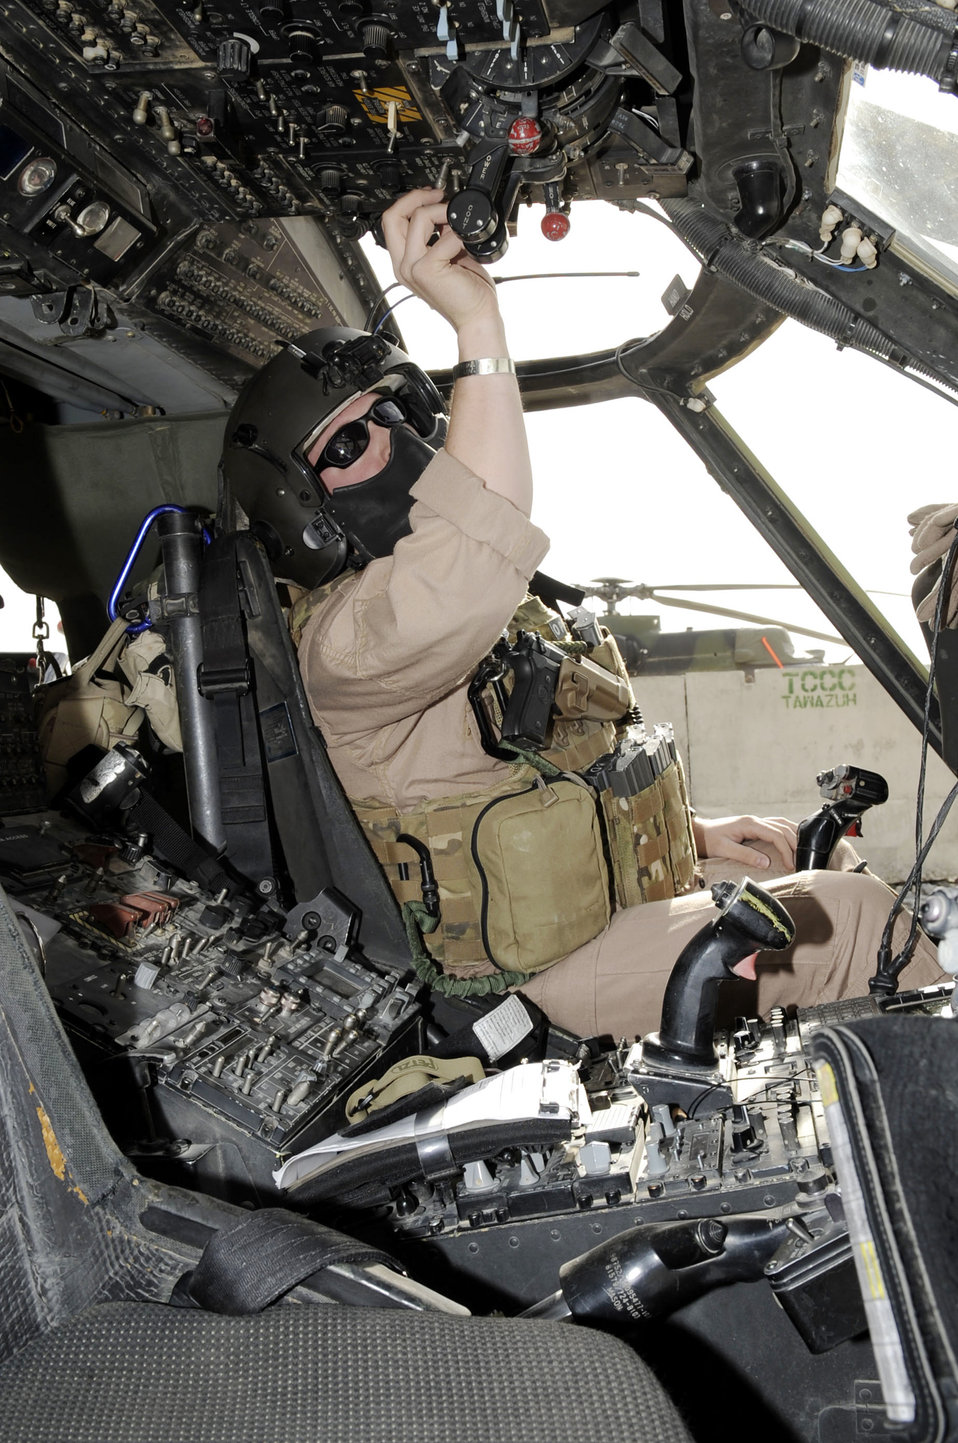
Rescue crews fly into hostile zones to save lives

Capt. Rob Roth conducts preflight checks inside of a HH-60G Pave Hawk helicopter March 5, 2010, at Kandahar Airfield, Afghanistan. Captain Roth is a 66th Expeditionary Rescue Squadron mission pilot from Nellis Air Force Base, Nev.